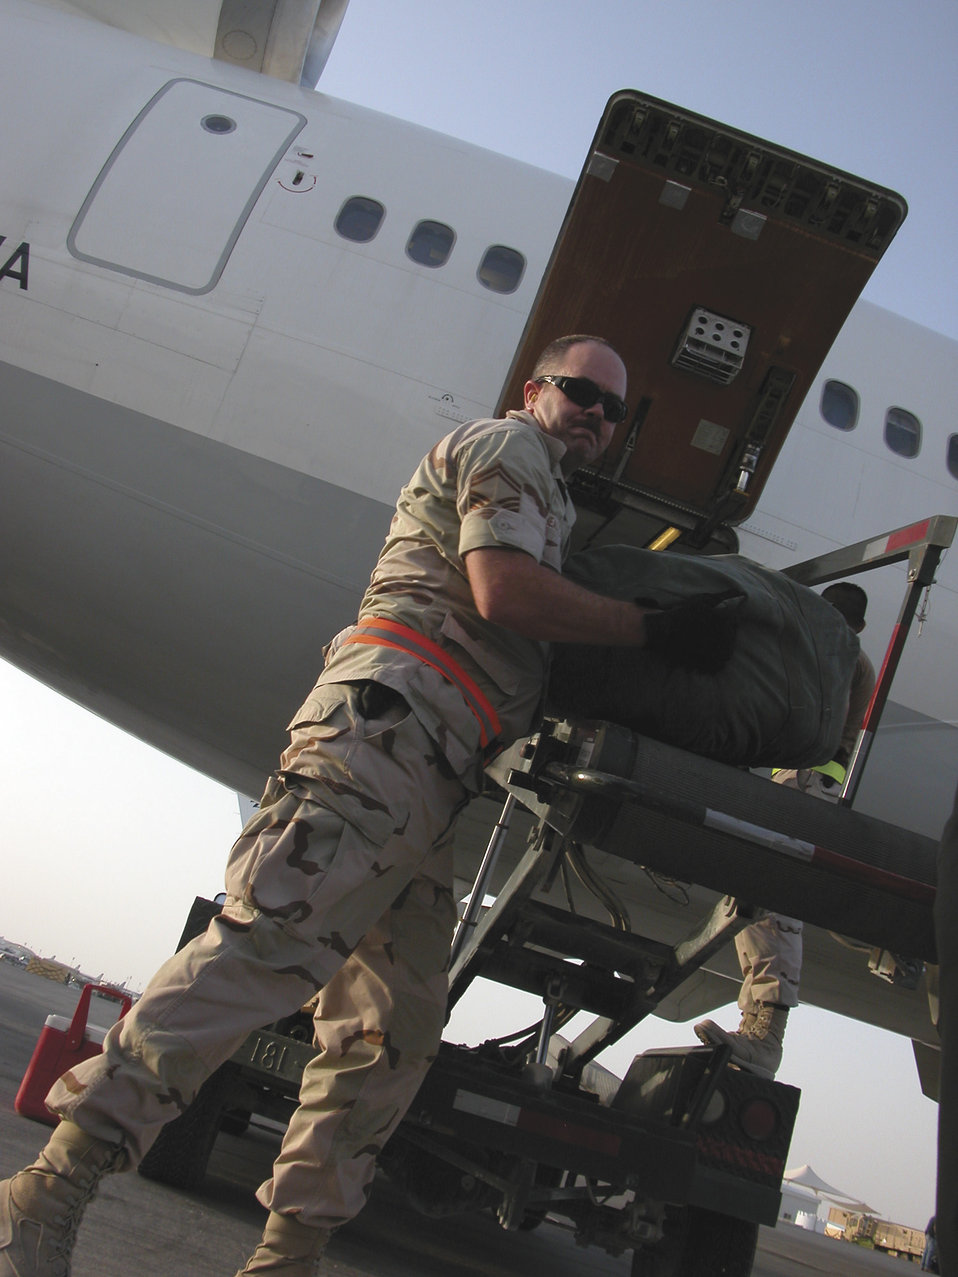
Base agencies keep rotations moving in right direction

SOUTHWEST ASIA -- Senior Master Sgt. John Heasley helps unload luggage from a rotator flight recently. Airmen from the 8th Expeditionary Air Mobility Squadron, along with the 379th Expeditionary Logistics Readiness Squadron's reception control center and the 379th Expeditionary Mission Support Group's personnel support for contingency operations office, are responsible for processing servicemembers in and out of U.S. Central Command's area of responsibility. Sergeant Heasley is the superintendent for the 8th EAMS.